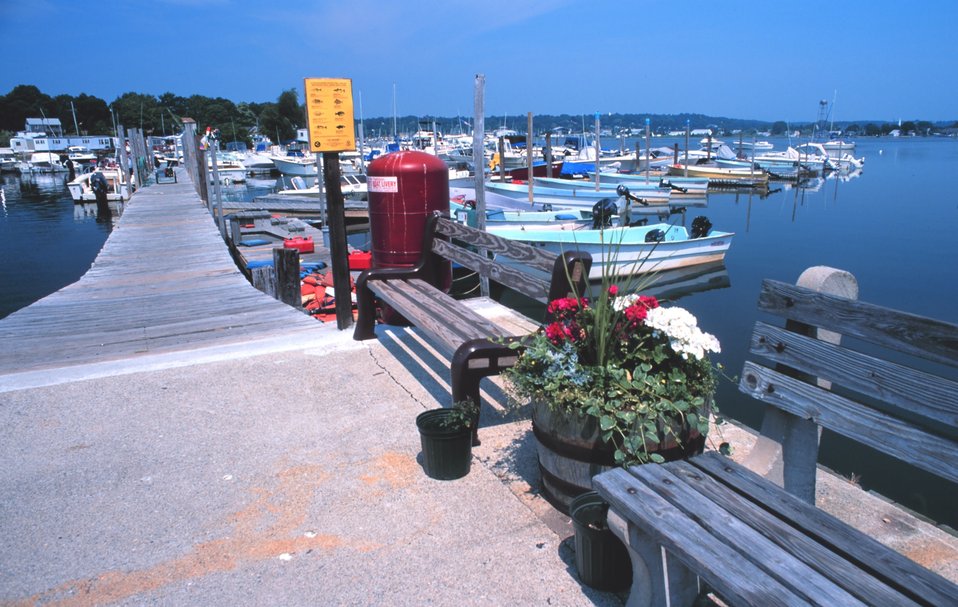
Small recreational fishing boats for rent at Mystic Harbor